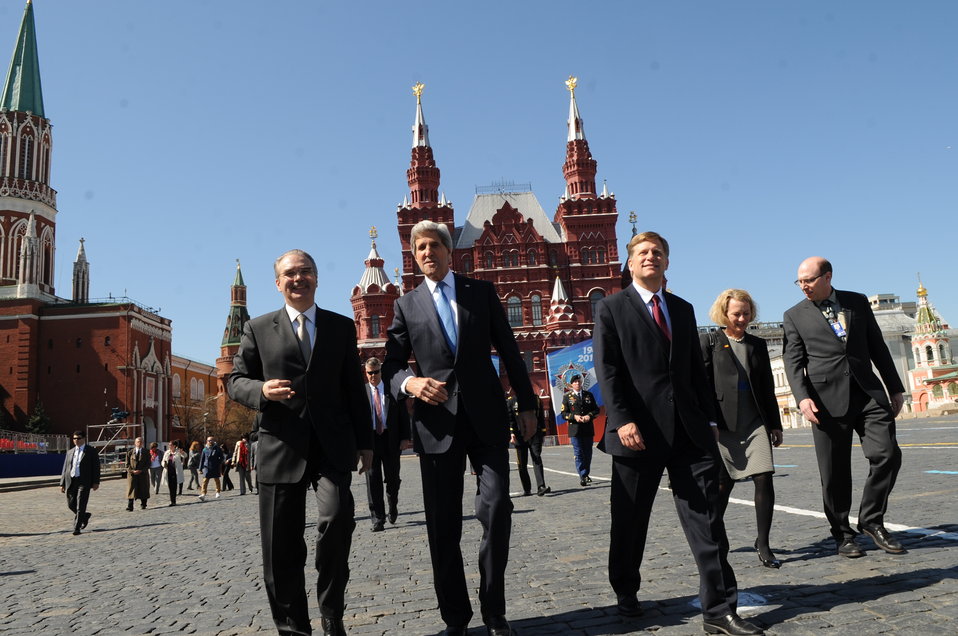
Secretary Kerry Tours Red Square

U.S. Secretary of State John Kerry, accompanied by U.S Ambassador to Russia Michael McFaul, right, and Russian Chief of Protocol Yuriy Filatov, left, tours Red Square during his visit to Moscow, Russia, on May 7, 2013.